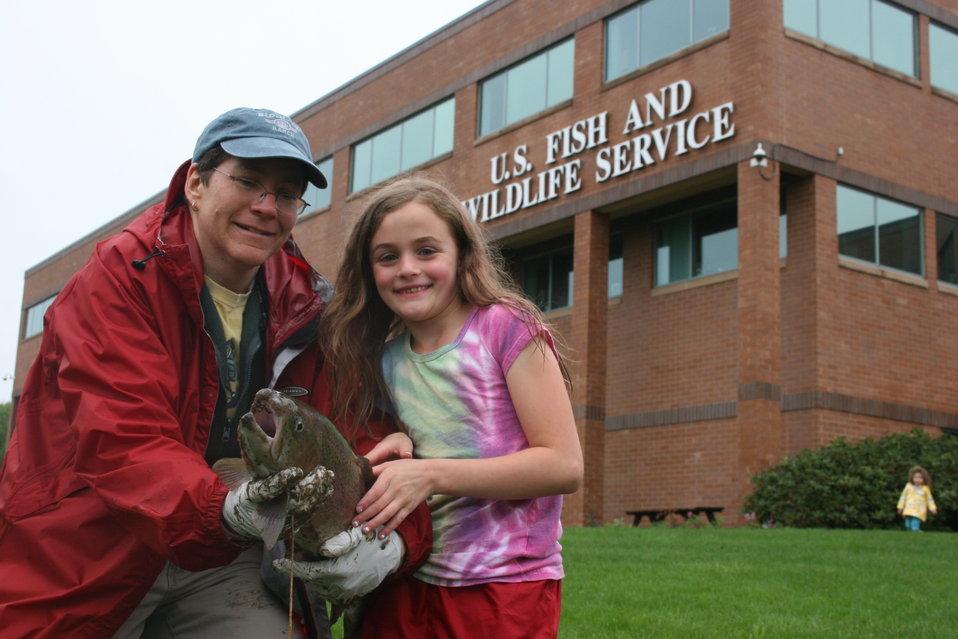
Winner - largest fish caught

Fishing event at U.S. Fish and Wildlife Service Regional Office in Hadley, MA